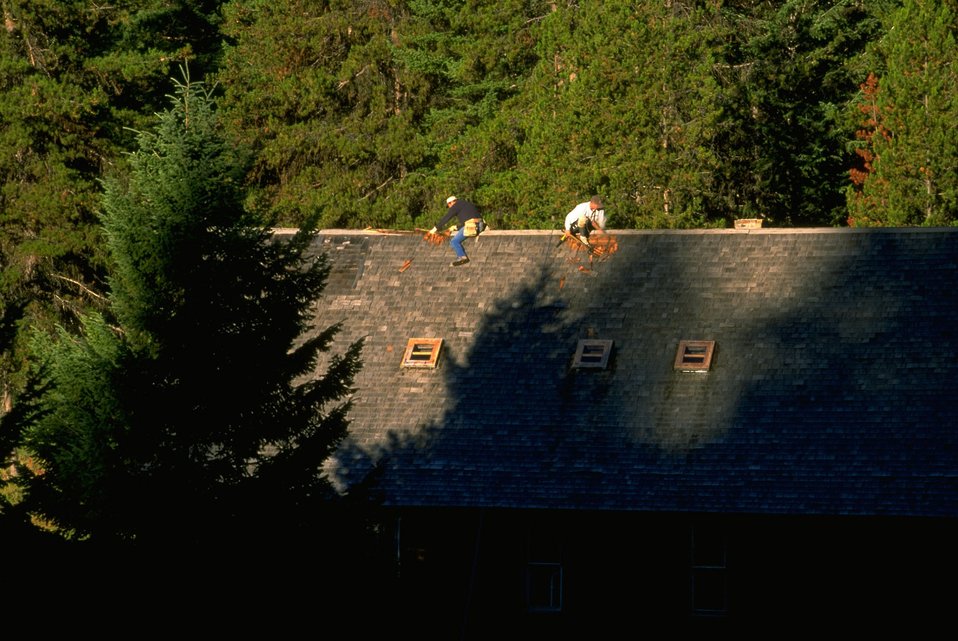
Garnet Ghost Town--stabilizing historic structure